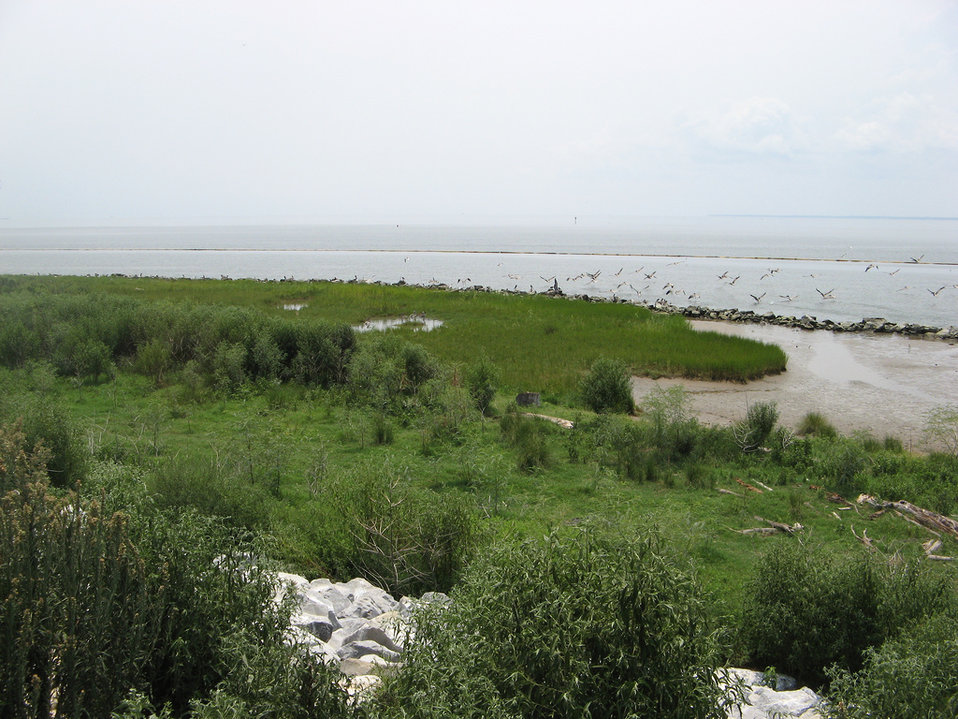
Galliard Island, Alabama Credit: Michael Assenmacher, USFWS